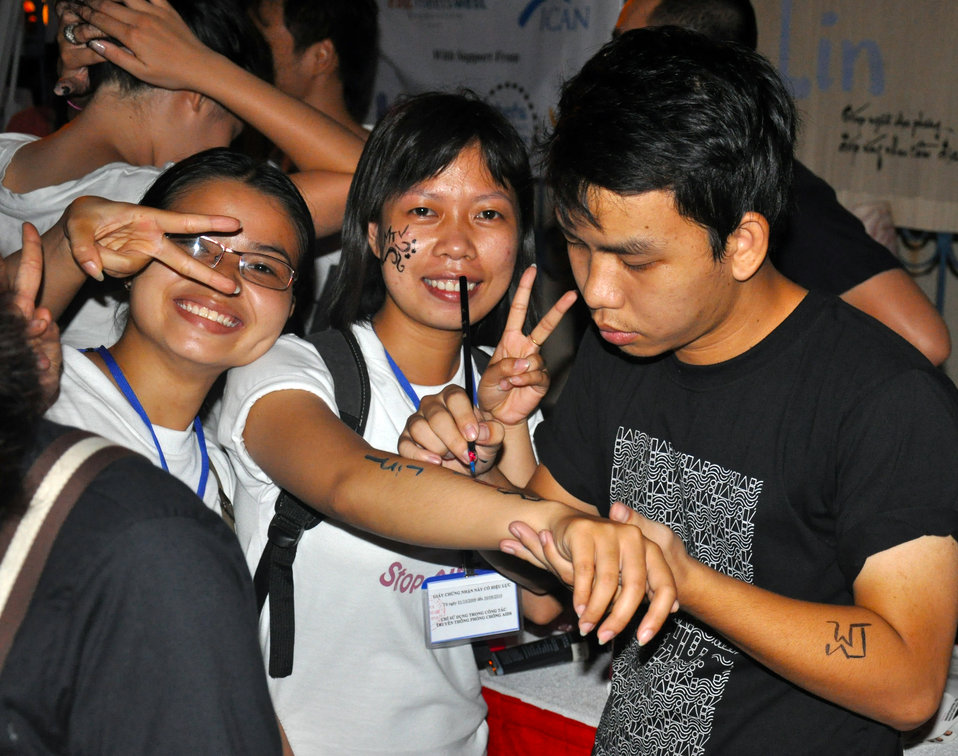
USAID MTV EXIT HCMC Concert

Concert in Ho Chi Minh City against human trafficking, April 17, 2010